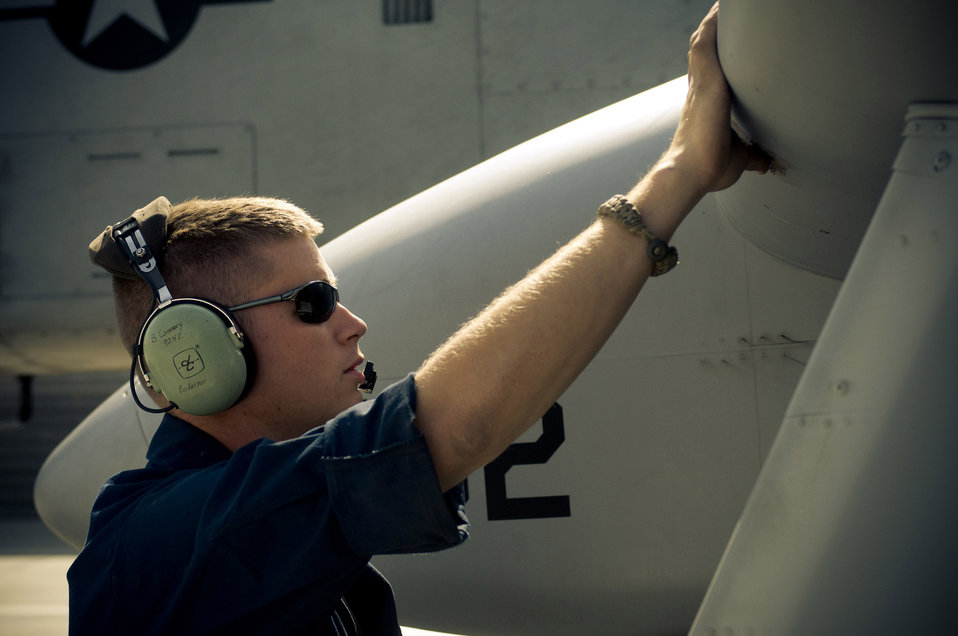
Ready to go

Senior Airman Benjamin Connery checks the leading edge slats on the wing of an A-10 Thunderbolt II Oct. 18 at Bagram Airfield, Afghanistan. Airman Connery is a 455th Expeditionary Aircraft Maintenance Squadron A-10 crew chief and deployed from Moody Air Force Base, Ga. He is from Cashmere, Wash.